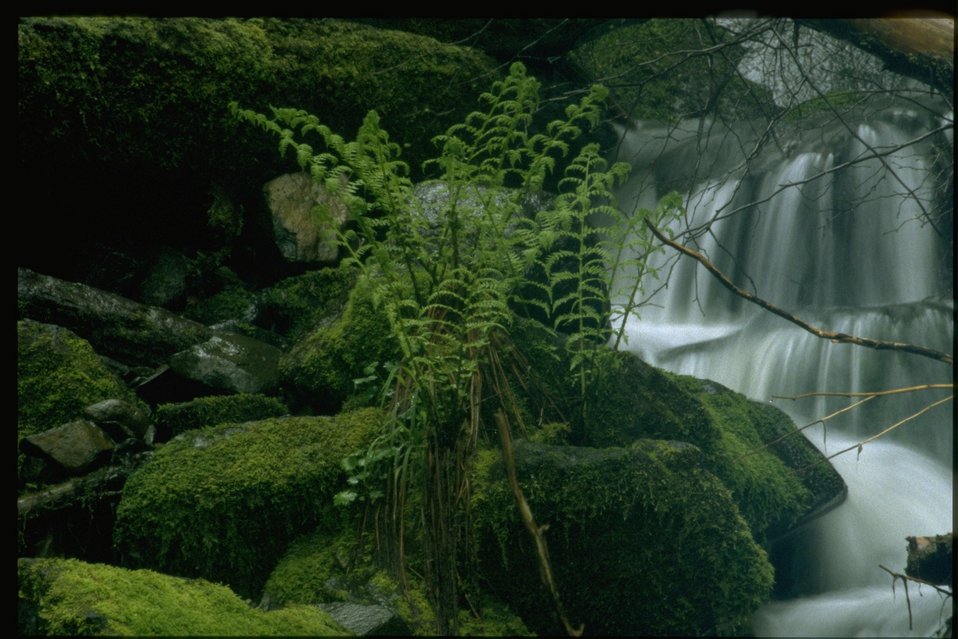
Swiftwater stream.